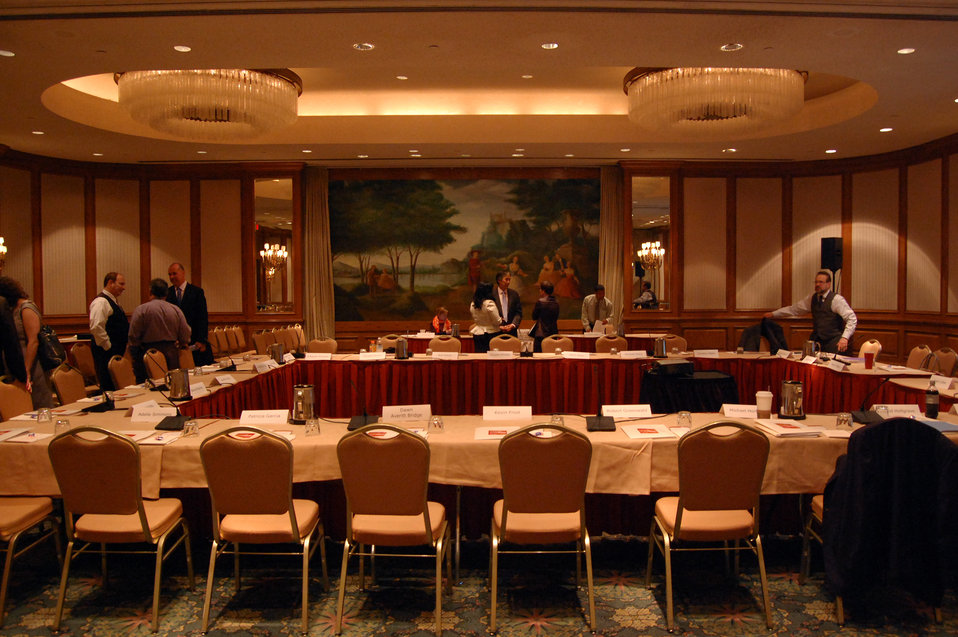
PACHA conf007